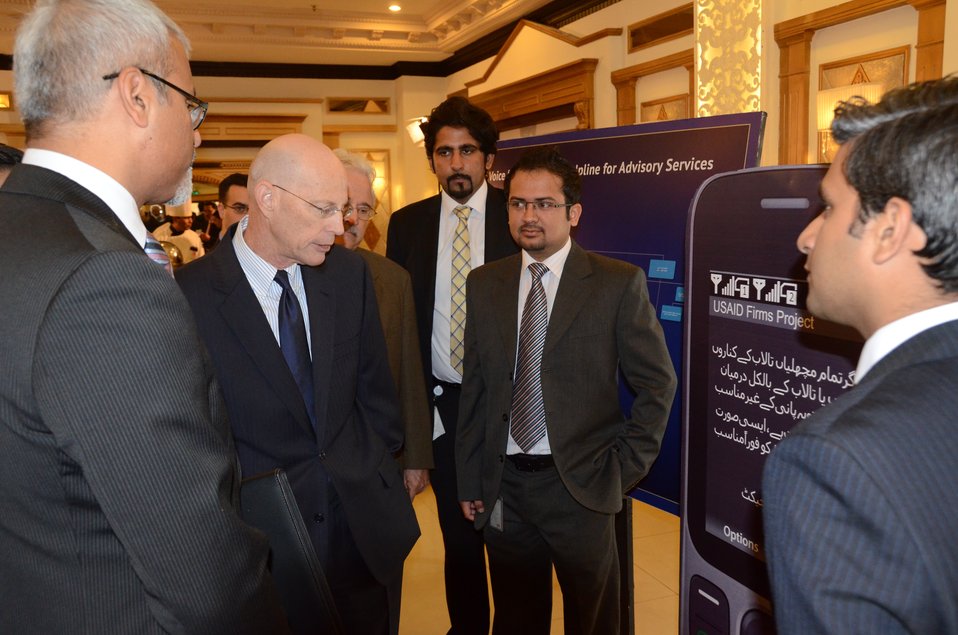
USAID Firms Project Interventions Walk Through - Gregory Gottlieb Mission Director USAID with project staff

The United States, through the U.S. Agency for International Development (USAID), launched a new pilot project to introduce mobile enabled advisory and financial services for peach and potato farmers and fishermen in Swat, Khyber Pakhtunkhwa.
Working in partnership with USAID through its Firms Project, the Government of Khyber Pakhtunkhwa will provide advisory and market information, and Telenor Pakistan – one of the largest telecom service providers in Pakistan – will provide technological assistance for the mobile services.

USAID Mission Director Gregory Gottlieb, Minister for Agriculture and Information Technology Government of Khyber Pakhtunkhwa Mr. Shahram Khan Tarrakai, Chairman Pakistan Telecommunication Authority Syed Ismail Shah and Director and Head of Products & Financial Services, Telenor Pakistan, Mr. Khurram Malik attended the launch of the pilot project and spoke at the event.